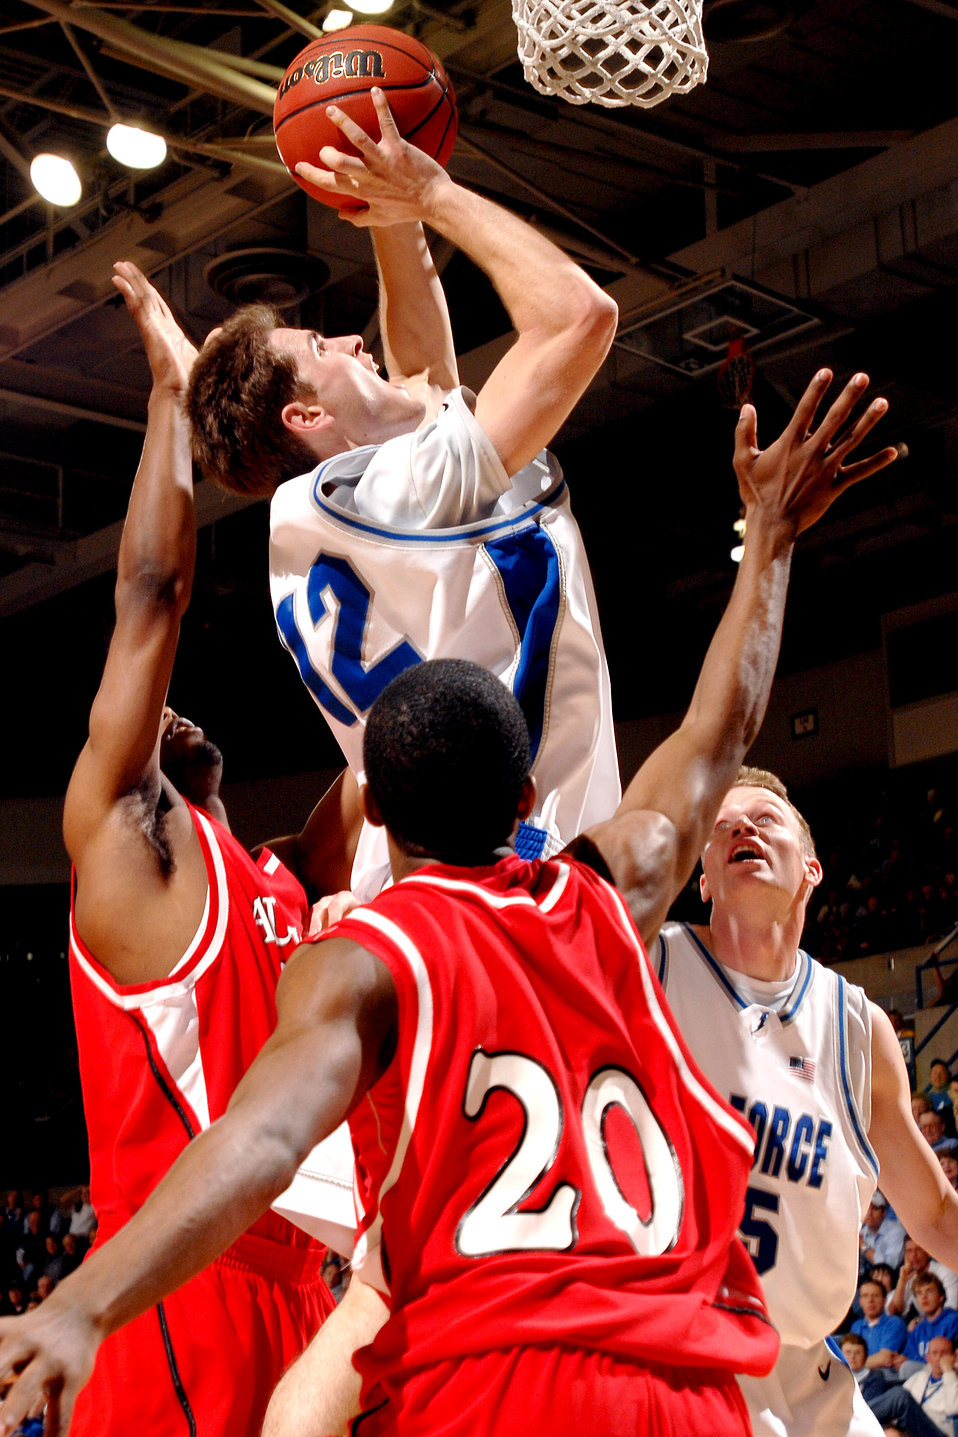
Falcons fly high in NIT debut

Air Force guard Tim Anderson elevates himself above Austin Peay defender Derek Wright for a lay up at the Air Force Academy's Clune Arena in Colorado Springs, Colo., March 14. By defeating Austin Peay 75-51 in the first round of the National Invitation Tournament, Air Force has its first post-season win in school history.